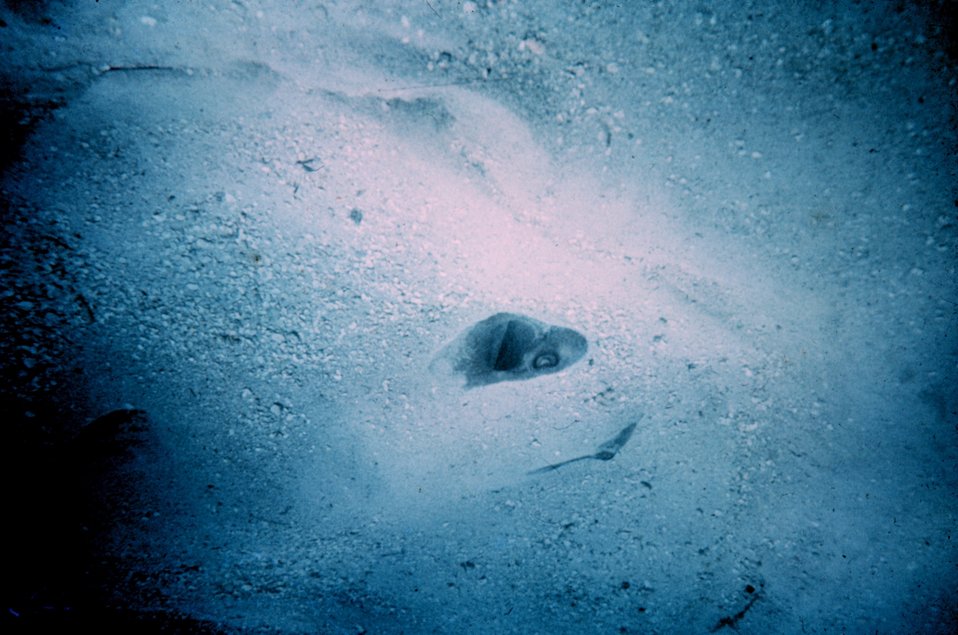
Large ray buried in sand